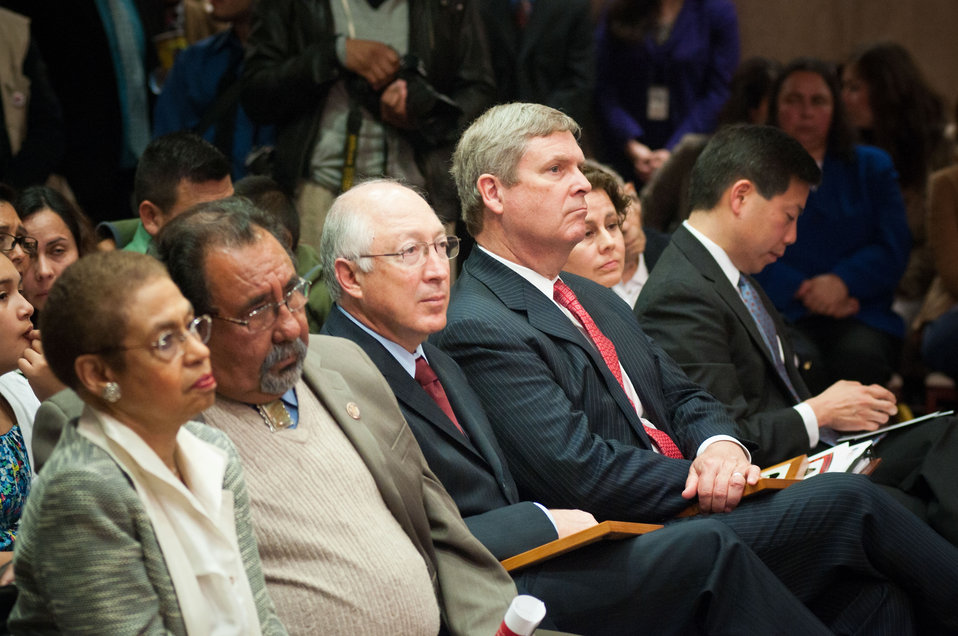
From left: Representative Eleanor Holms-Norton, District of Columbia, Representative Raul Grijalva, Arizona, Interior Secretary Ken Salazar, Agriculture Secretary Tom Vilsack, Cecilia Munoz, White House, Director of Inter-Governmental Affairs and Chris Lu, White House Cabinet Secretary listen to cabinet members, family and friends express their thoughts and reminiscence of Cesar Chavez the farm workers rights activist during the dedication of the Cesar E. Chavez Memorial Auditorium at the United States Department of Labor in Washington, D.C., Monday, March 26, 2012. Chavez was a Mexican-American labor leader who used non-violent methods to fight for the rights of migrant farm workers in the southwestern United States. Chavez founded the Cesar Chavez Foundation, a group that advocates for the rights of farm workers, acting to increase wages and improve the working conditions and safety of farm workers.